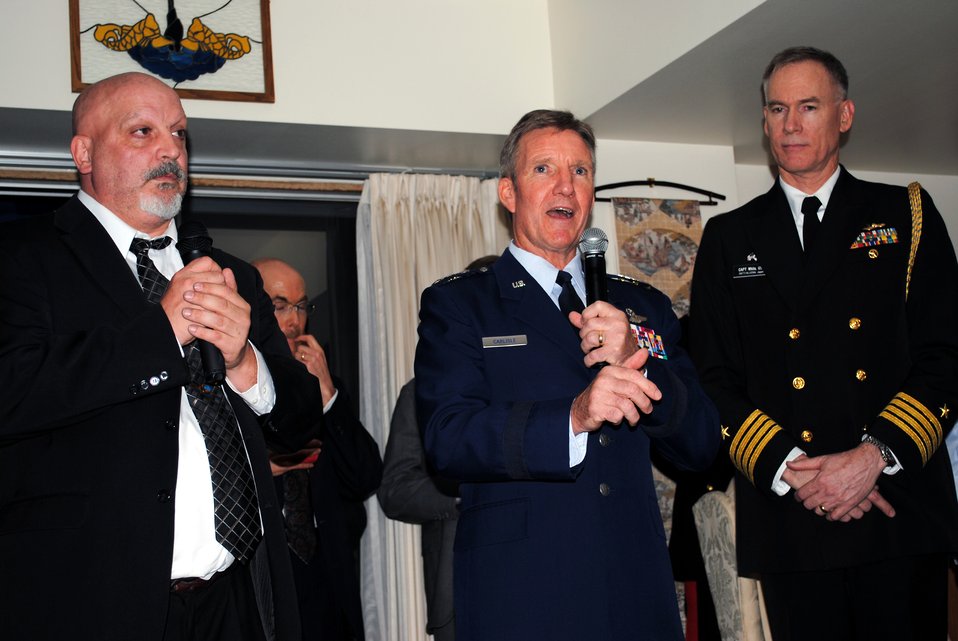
U.S., Japan forces celebrate as alliance reaches half-century mark

Lt. Gen. Herbert J.